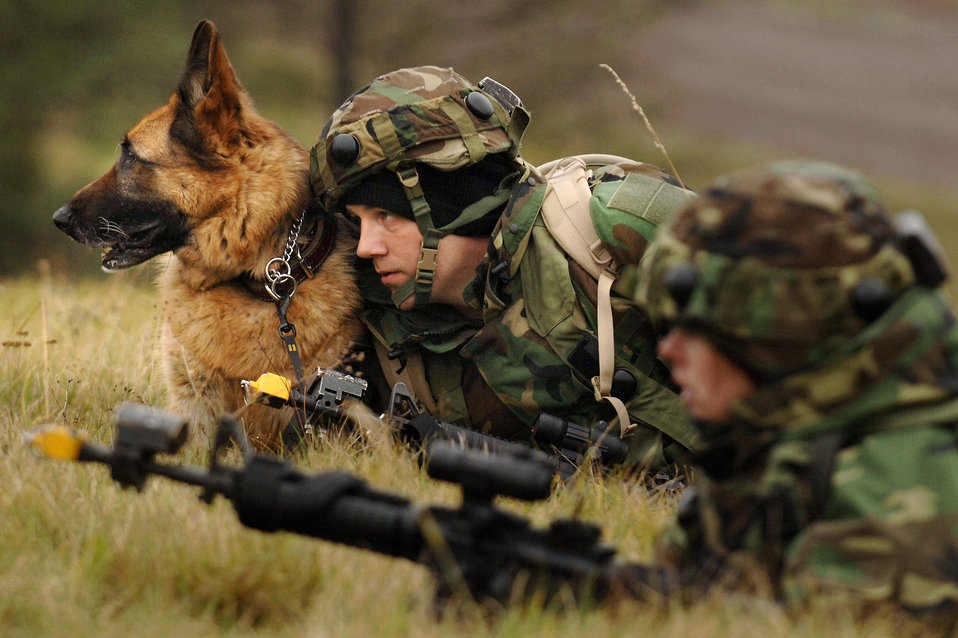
Ducking 'hostile fire'

Staff Sgt. Mark Reidl, his partner Lord, an 8-year-old German Shepherd, and 1st Lt. Kristen Congelosi (foreground) react to